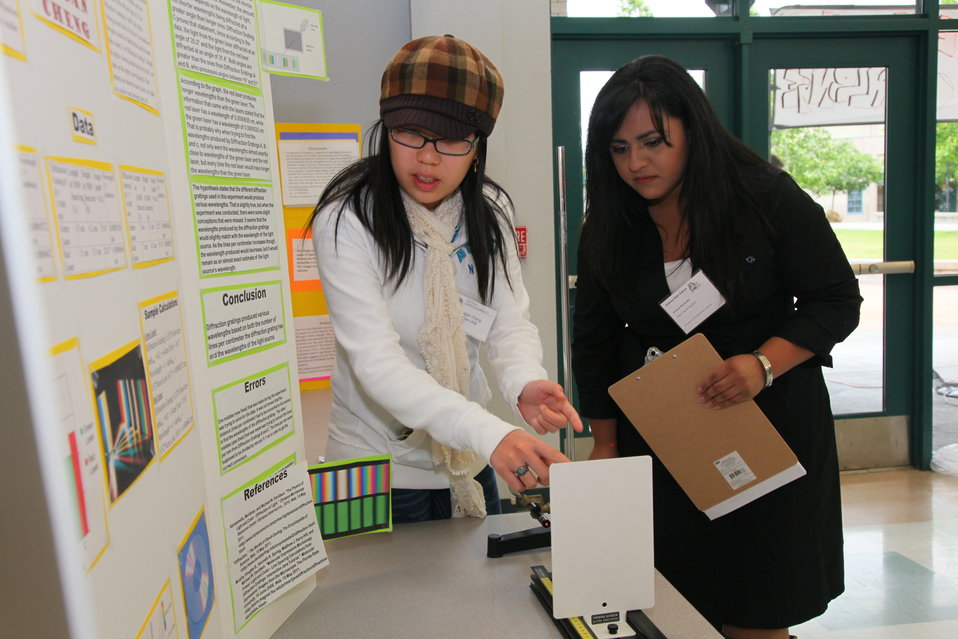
4th Annual Folsom High School Engineering Challenge

FOLSOM, Calif. (May 17, 2011) – Civil engineer Arianna Raymundo (right) listens to Folsom High’s Magan Cheng explain her physics project on diffraction grating and wavelengths of a light source during the 4th annual Folsom High School Engineering Challenge here May 17. Raymundo was one of three judges from the U.S. Army Corps of Engineers Sacramento District’s engineering division that participated in the Folsom High School event. The students displayed various rocket, solar, hover, catapult, air compression, electro, magnetic and light-bending projects with detailed narratives of their experience for the judges.